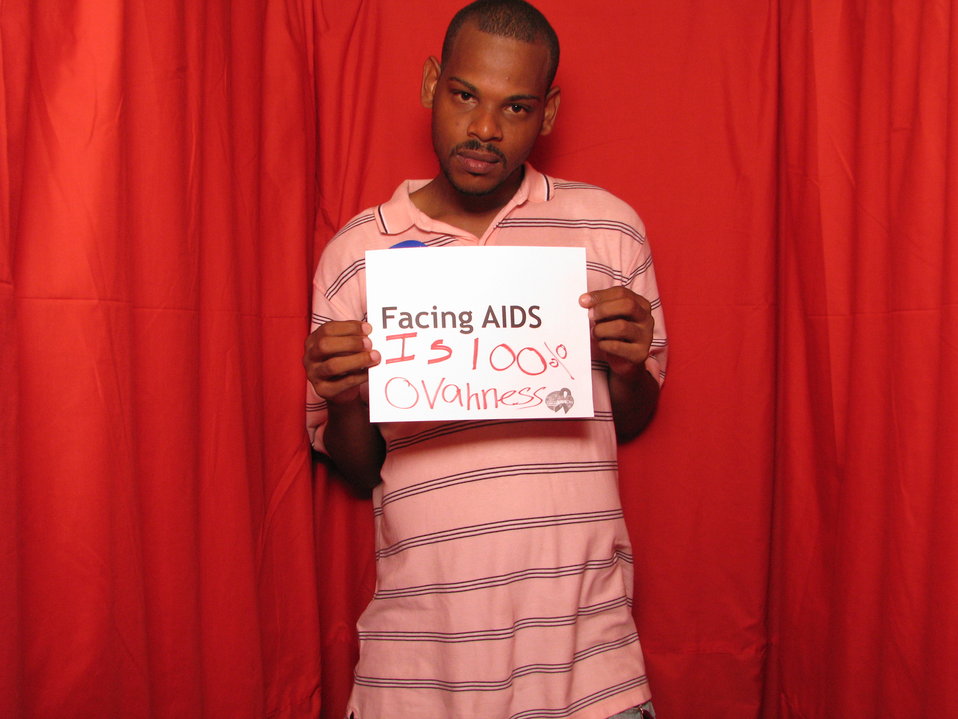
FACING AIDS is 100% ovahness.

From the AIDS.gov photo booth at the U.S. Conference on AIDS, September 2010 (Orlando, FL).